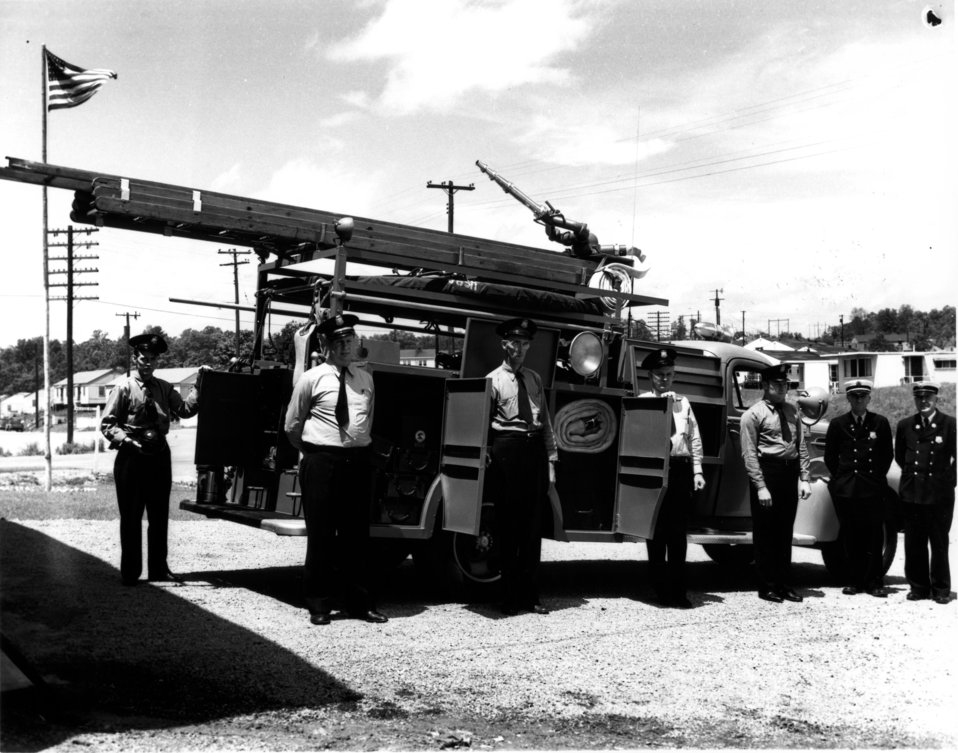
Services at Oak Ridge